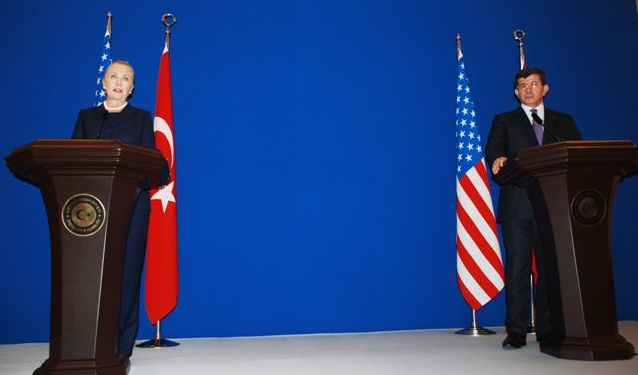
Secretary Clinton and Turkish Foreign Minister Davutoglu Address Reporters

U.S. Secretary of State Hillary Rodham Clinton and Turkish Foreign Minister Ahmet Davutoglu address reporters after their bilateral meeting in Istanbul, Turkey, on August 11, 2012.